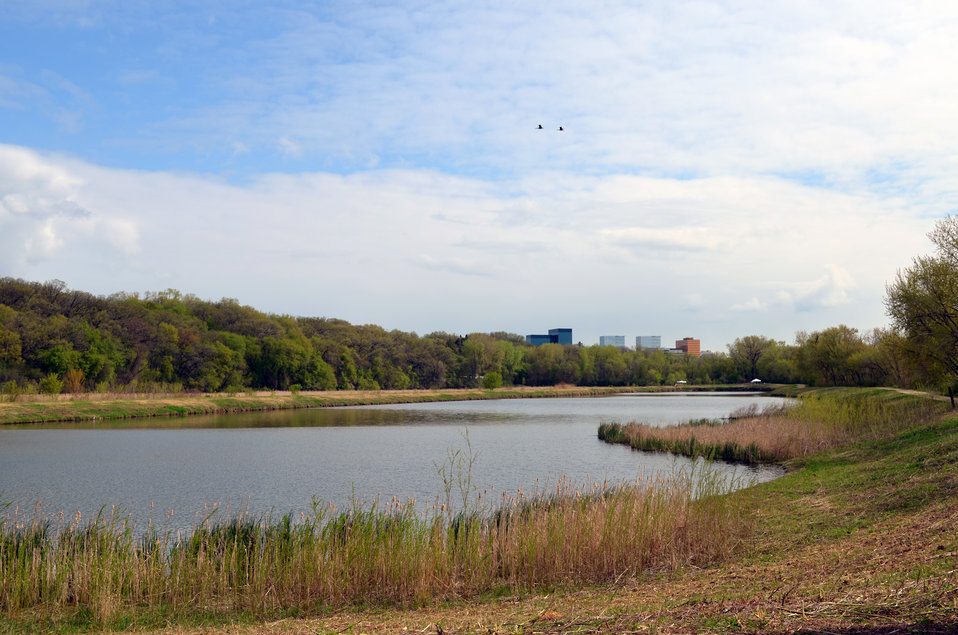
Urban Wetlands